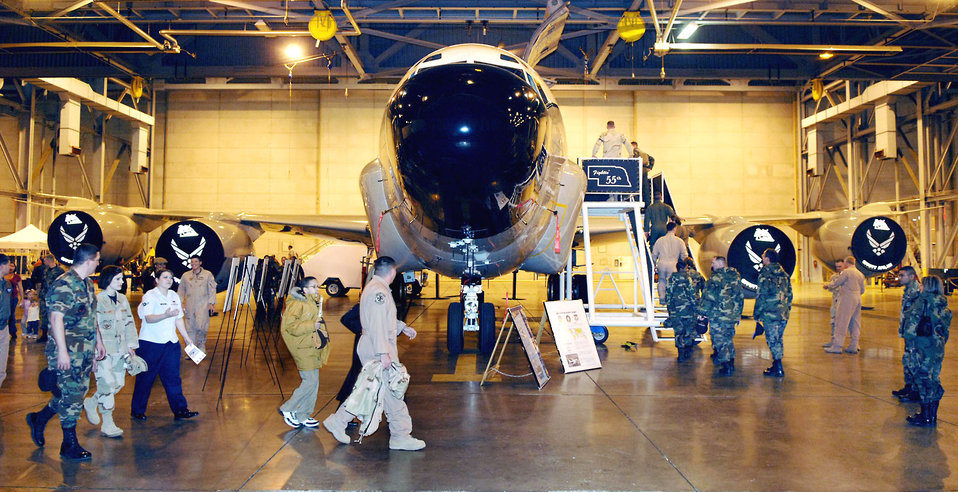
55th Wing marks 6,000 days in Southwest Asia

Visitors check out the first RC-135 Rivet Joint aircraft that deployed to Southwest Asia at Offutt Air Force Base, Neb., where the 55th Wing celebrated its 6,000 straight days of deployment to the region during a ceremony Jan. 11. The first RC-135 saw action during Desert Storm in 1990, and elements of the 55th Wing have been continuously deployed to the region since then.